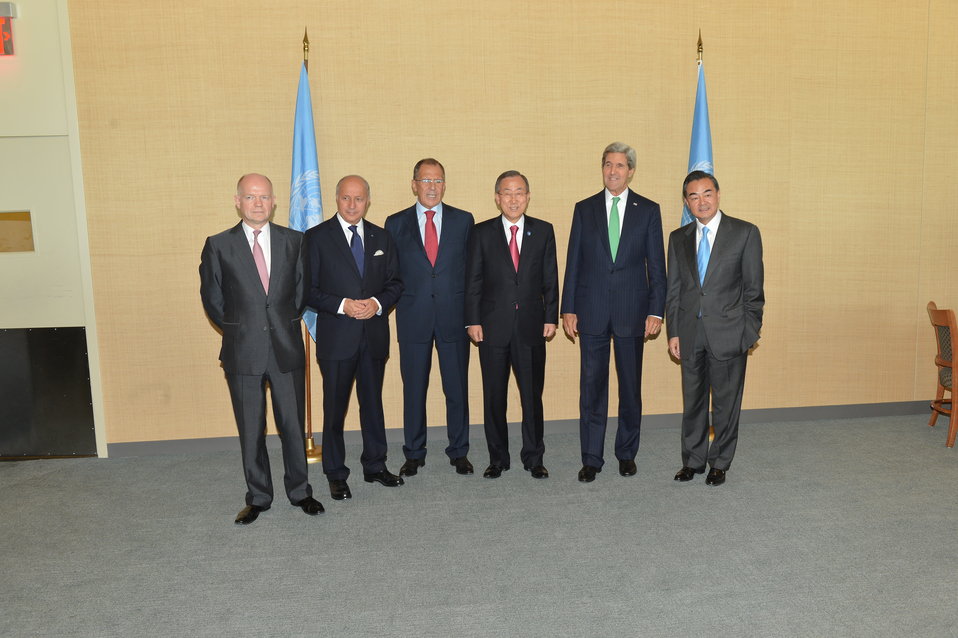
Secretary Kerry Meets With P5 Members

U.S. Secretary of State John Kerry meets with P5 members at the United Nations in New York City on September 25, 2013.